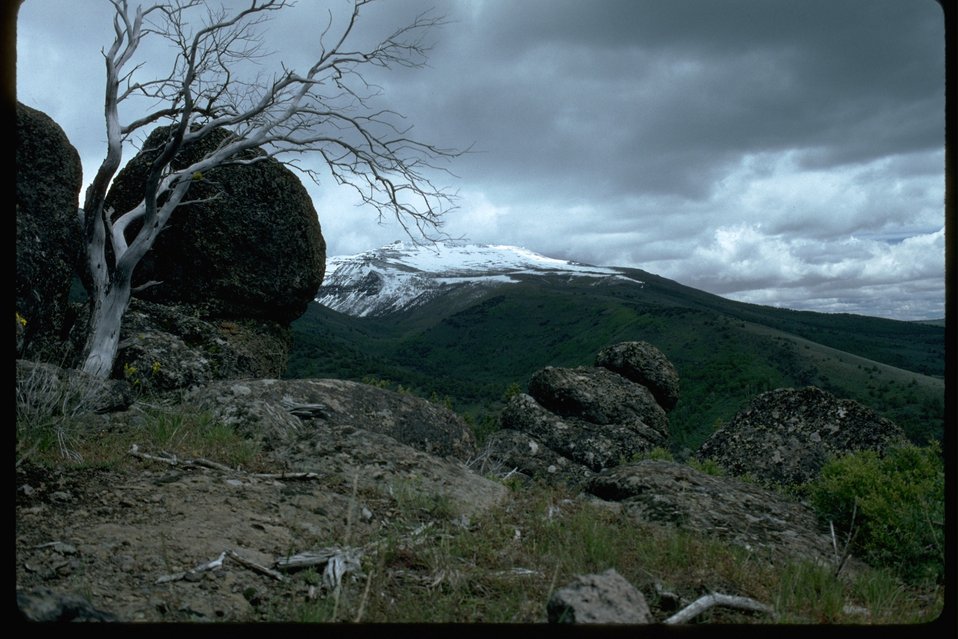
View of Little Indian Canyon and Ankle Mountain from Rooster Comb grade of the Steens with early snow in late fall.